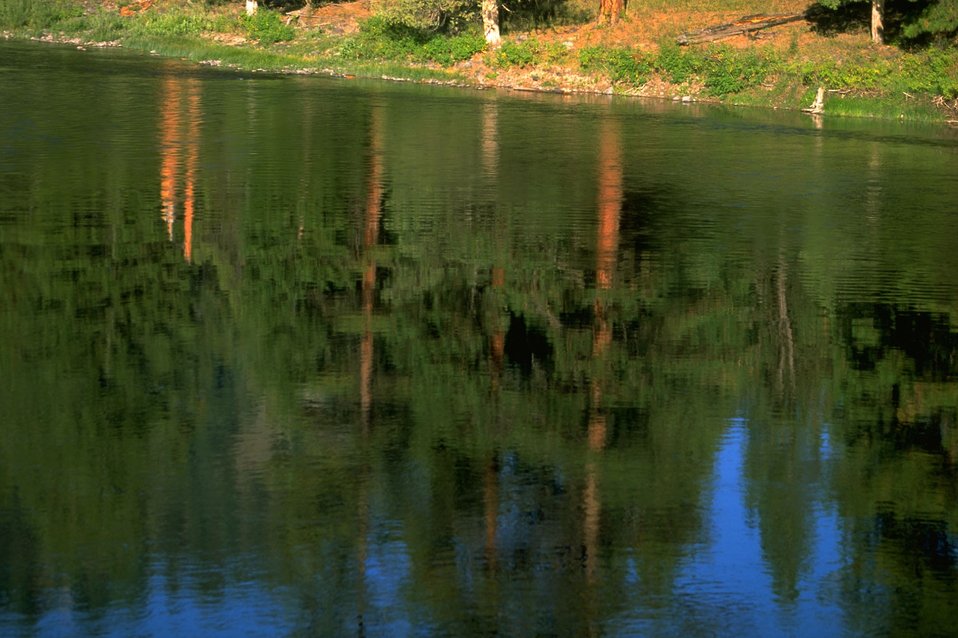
Pine trees/forest reflection in Blackfoot River